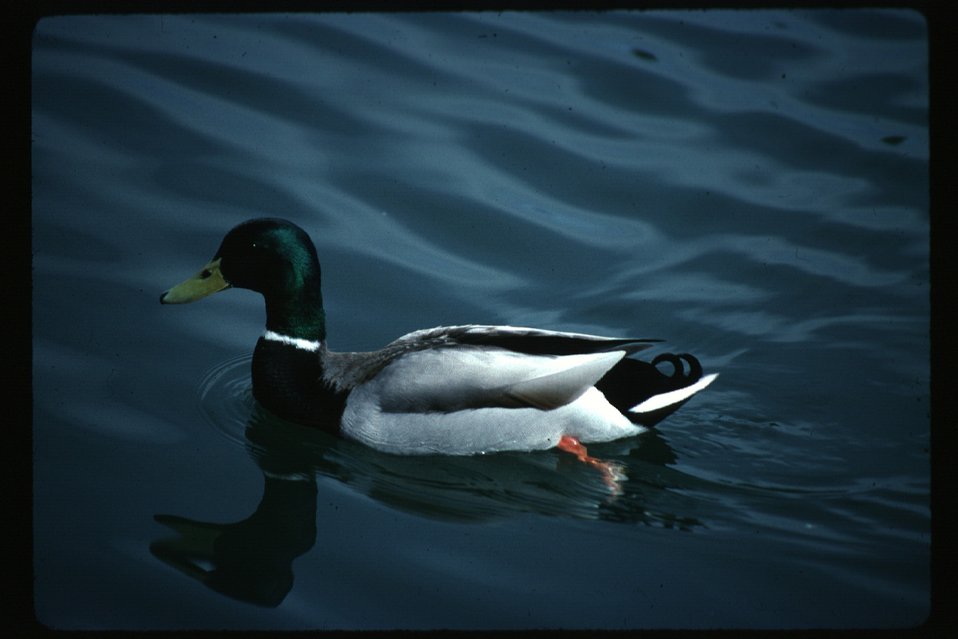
Mallard Duck UCSC Upper Columbia Salmon Clearwater District